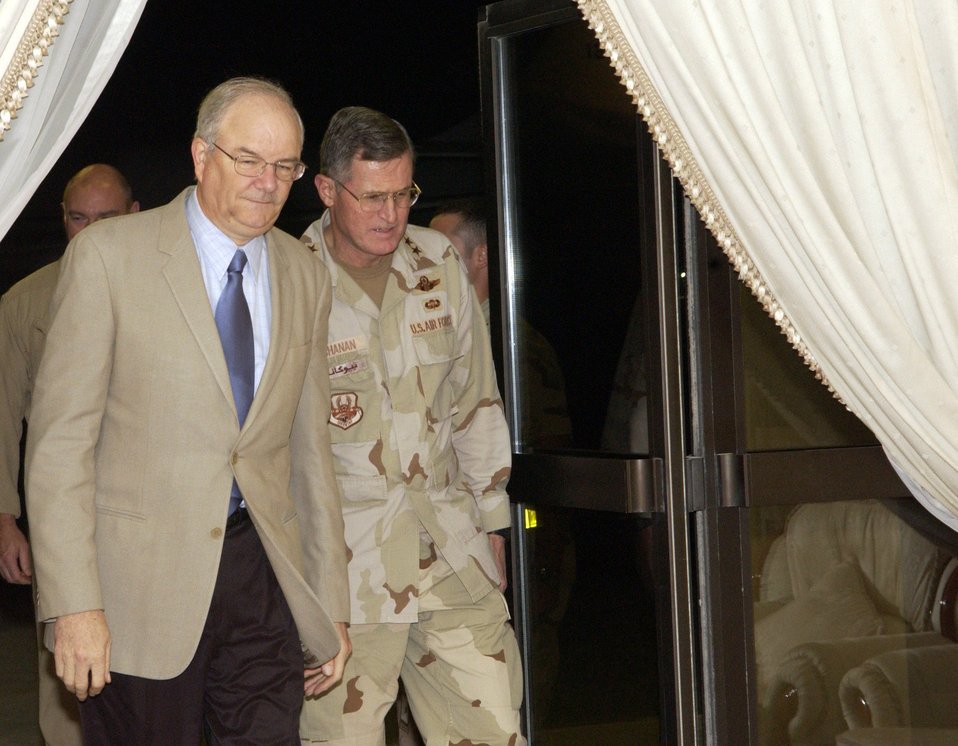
Desert duty

SOUTHWEST ASIA (AFPN) -- Secretary of the Air Force Michael W. Wynne goes on a tour with Lt. Gen. Walter E. Buchanan III, 9th Air Force and U.S. Central Command Air Forces commander. This is Secretary Wynne's first tour to the region.